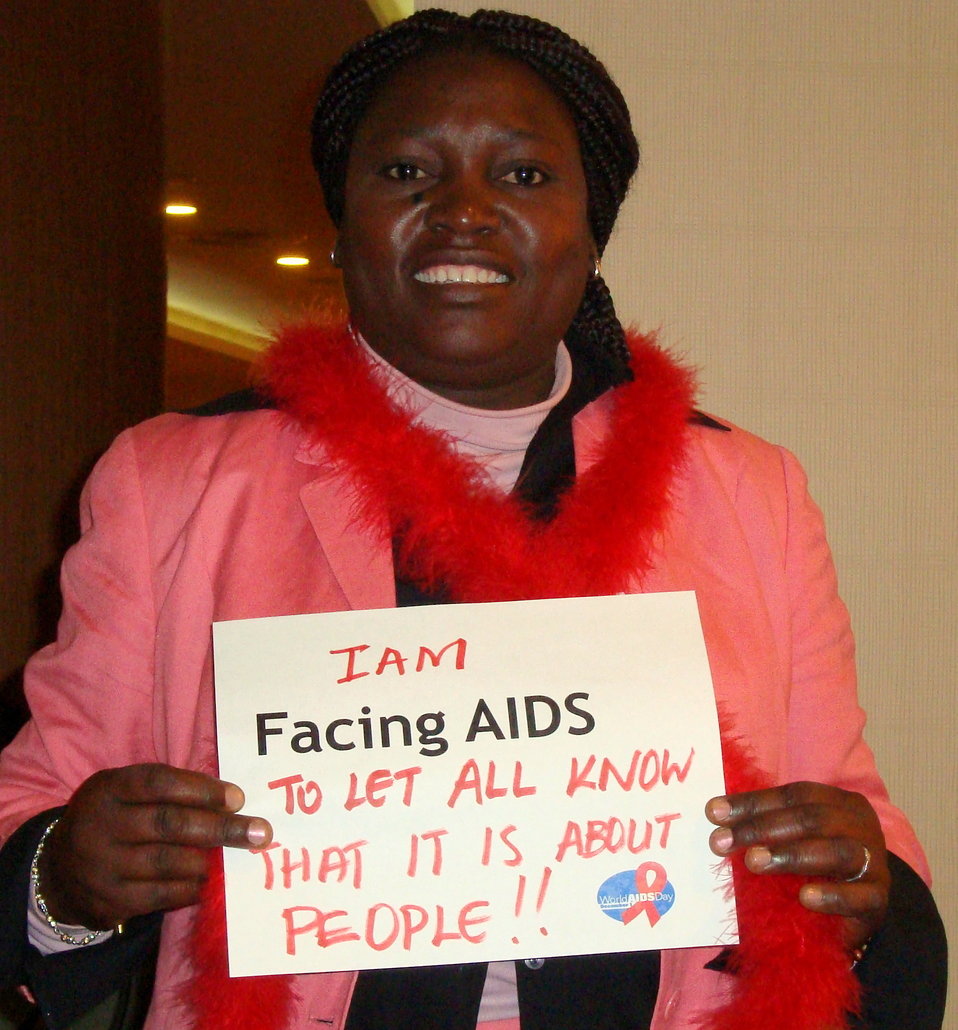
FacingAIDSCampaign 023